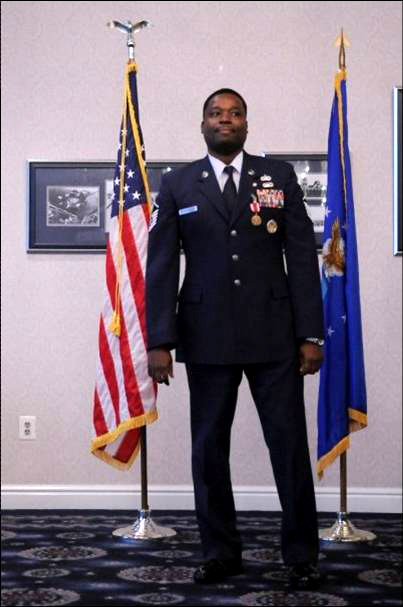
Cedric McLaurie with the Office of Information, Resources, and Technology Management, served in the Air Force from September 1989 to February 2010. He served in Louisiana, Mississippi, Okinawa, Japan, Saudi Arabia, Virginia, Bahrain, Georgia and Washington, D.C. His highest rank held was Master Sergeant.